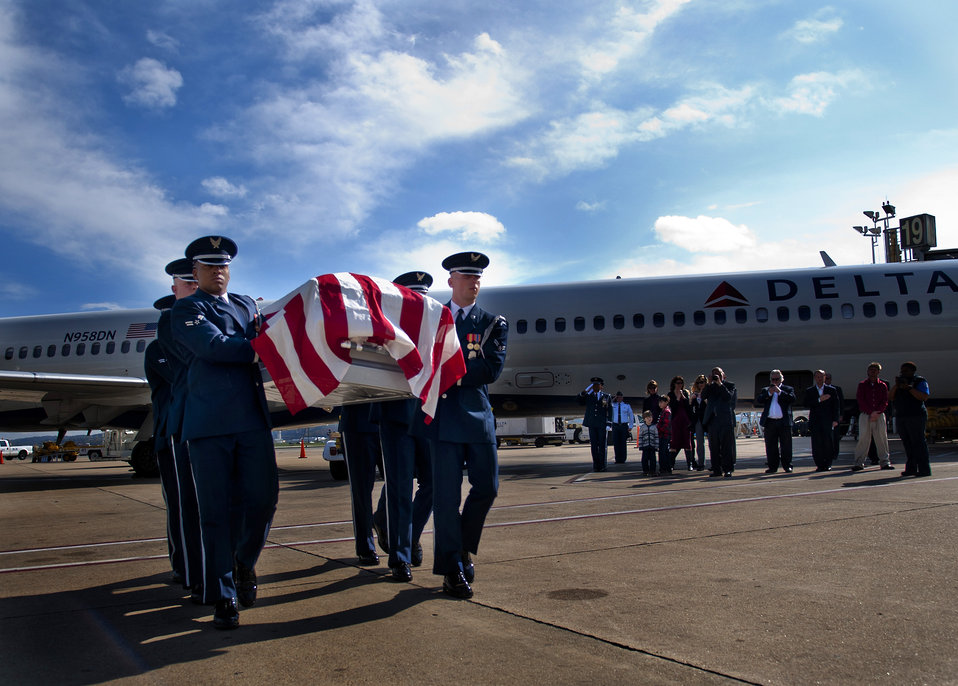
Full military honors

U.S. Air Force Honor Guard members carry the remains of Col. Wendell Keller, of Fargo N.D. and Capt.Virgil K. Meroney, of Fayetteville, Ark., at Ronald Reagan Washington National Airport Oct. 18, 2012. Family members were present at the arrival. March 1, 1969, Keller and Meroney were the crew of an F-4D Phantom II aircraft that went down while carrying out a night time strike mission in Khammouan Province, Laos. Nearby aircrews reported seeing the aircraft hit by enemy fire. No parachutes were seen after the aircraft was hit. Heavy enemy presence in the area prevented recovery efforts.